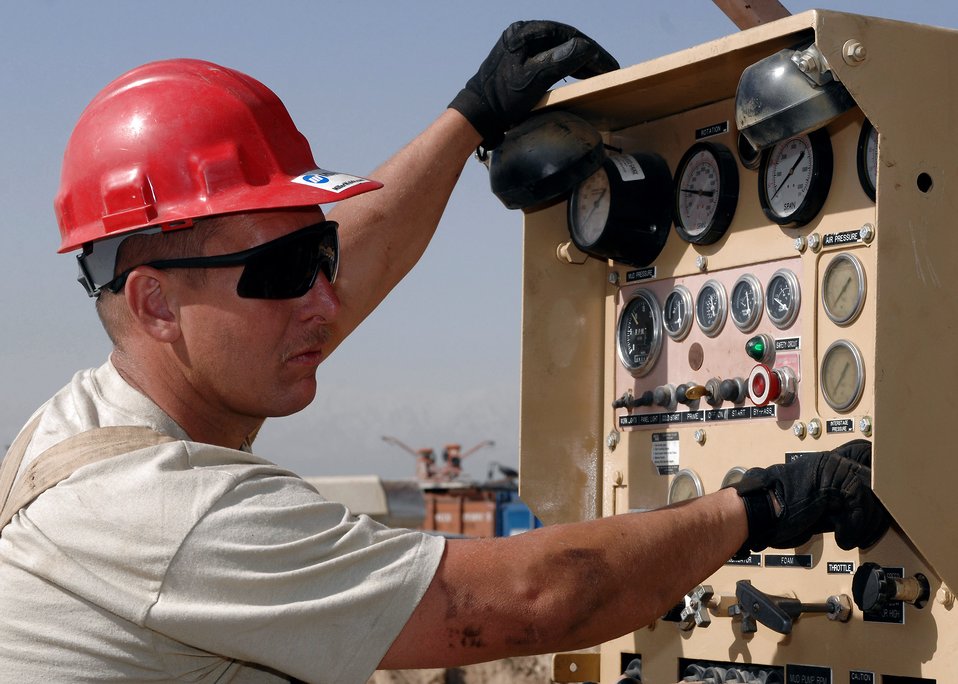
Determination, ingenuity prevail for Bagram Airmen

Master Sgt. John Moreland checks the gauges on a water-well digging rig during an operational check March 21 at Bagram Air Base, Afghanistan. More than $400,000 of damage to the rig was repaired at a cost of $80. Sergeant Moreland is the 819th RED HORSE Squadron metals technology NCO in charge deployed from Malmstrom Air Force Base, Mont.